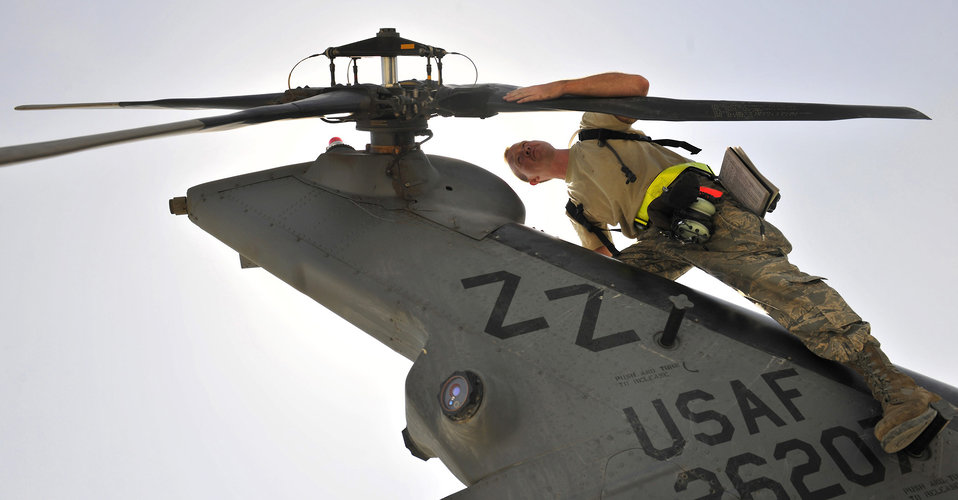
This rotor is good to go

Airman 1st Class Hunter Rains, a crew chief assigned to the 33rd Expeditionary Helicopter Maintenance Unit at Bagram Airfield, Afghanistan, inspects the tail rotor blade on an HH-60 Pave Hawk helicopter Sept. 2, 2010.